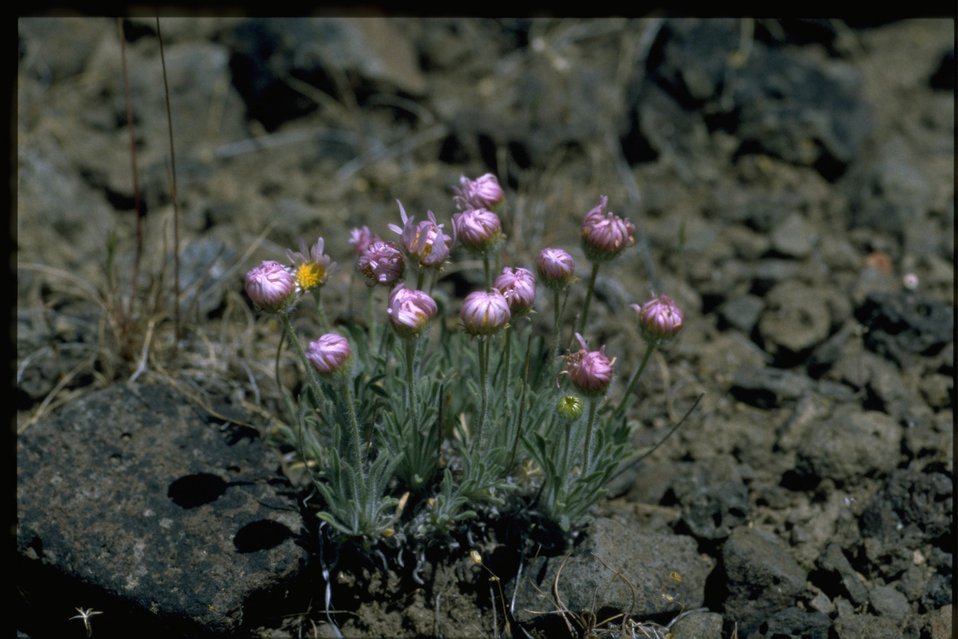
Medium shot of purple cushion fleabane (Erigeron poliospermus var. poliospermus).